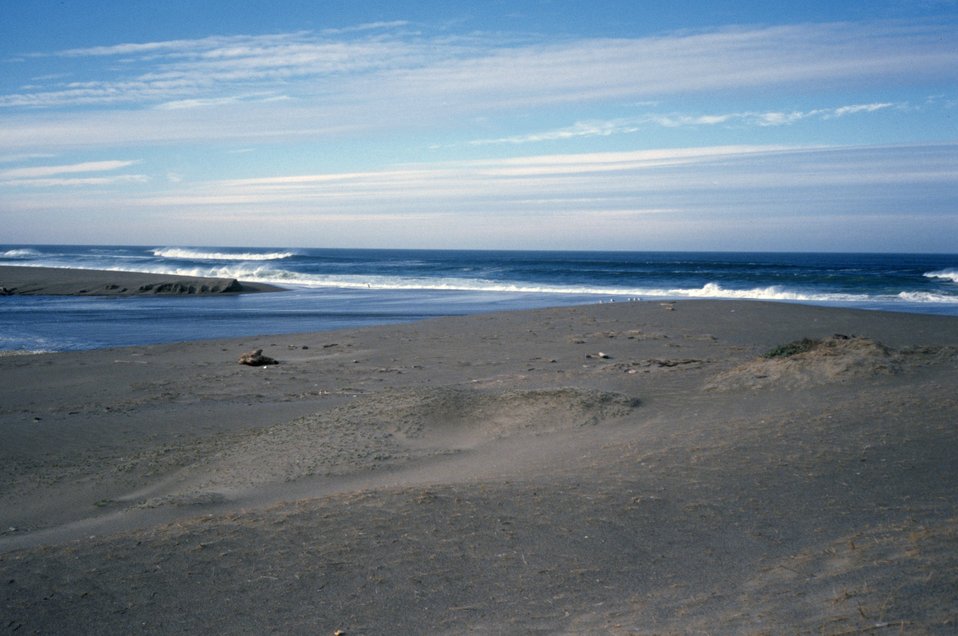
Point Reyes Great Beach